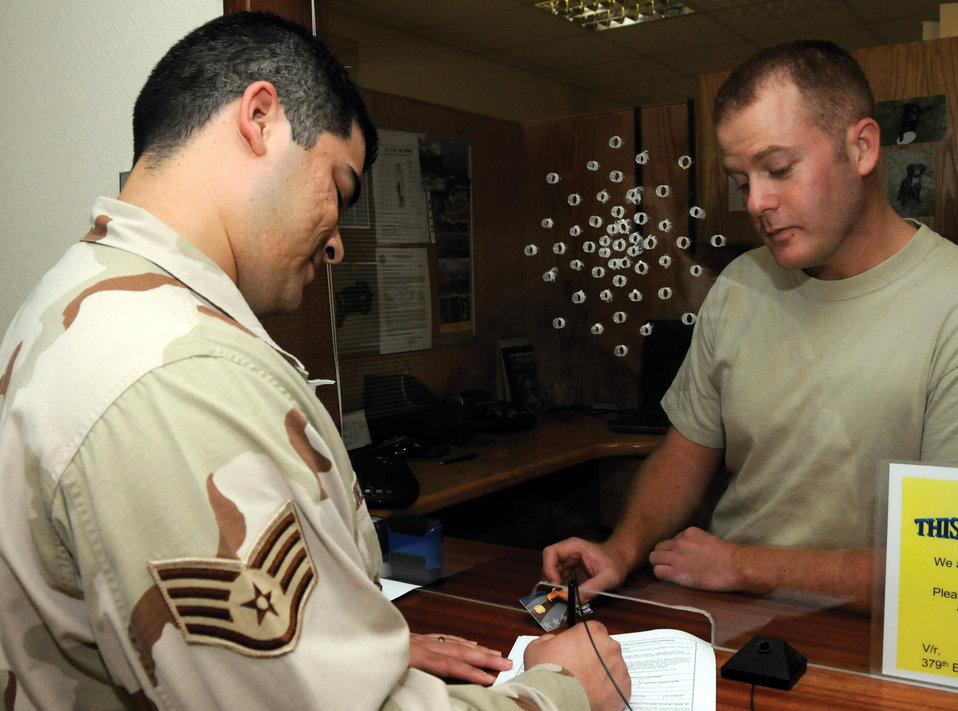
Moving the money behind the mission

Staff Sgt. Benjamin King, right, assists a customer in processing paperwork to get an Eagle Cash Card in Southwest Asia Sept. 3. The Eagle Cash Card became mandatory for all deployed members Aug. 1. Sergeant King is a cashier assigned to the 379th Expeditionary Comptroller Squadron.